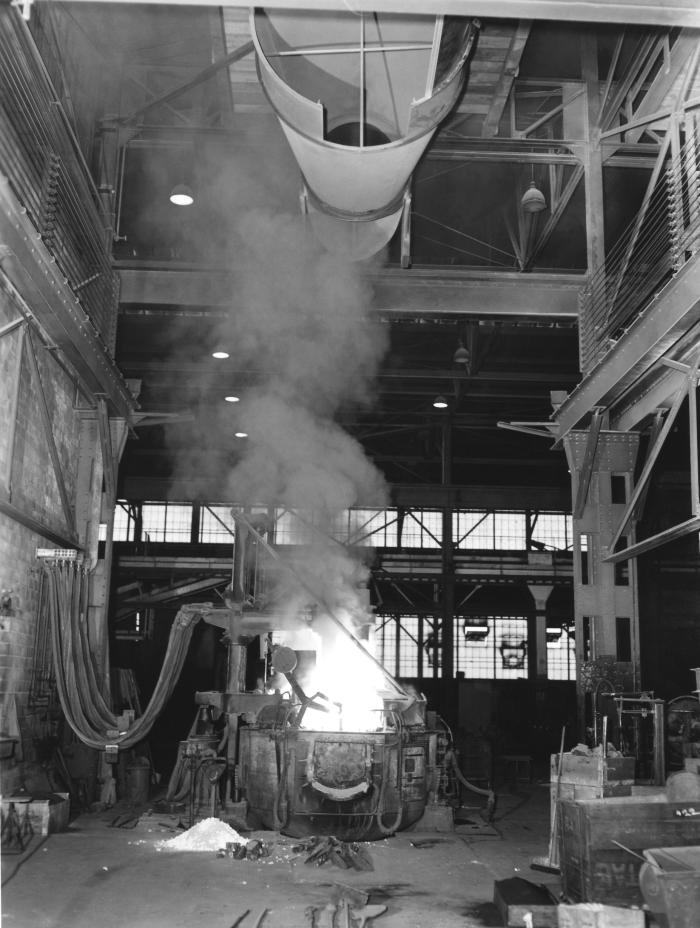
This historical 1947 photograph was provided by the Center for Disease Control's (CDC), National Institute for Occupational Safety and Health (NIOSH). It depicted an indoor electric steel furnace, at the Pacific Car & Foundry Co., Renton, Washington that was equipped with an overhead ventilation hood, shown here in the lowered position. Before the installation of this ventilation system, the fumes were said to be quite bothersome. Note PHIL 9616, showing the ventilation hood in the raised position, in order to allow the passage of a 'crane'.